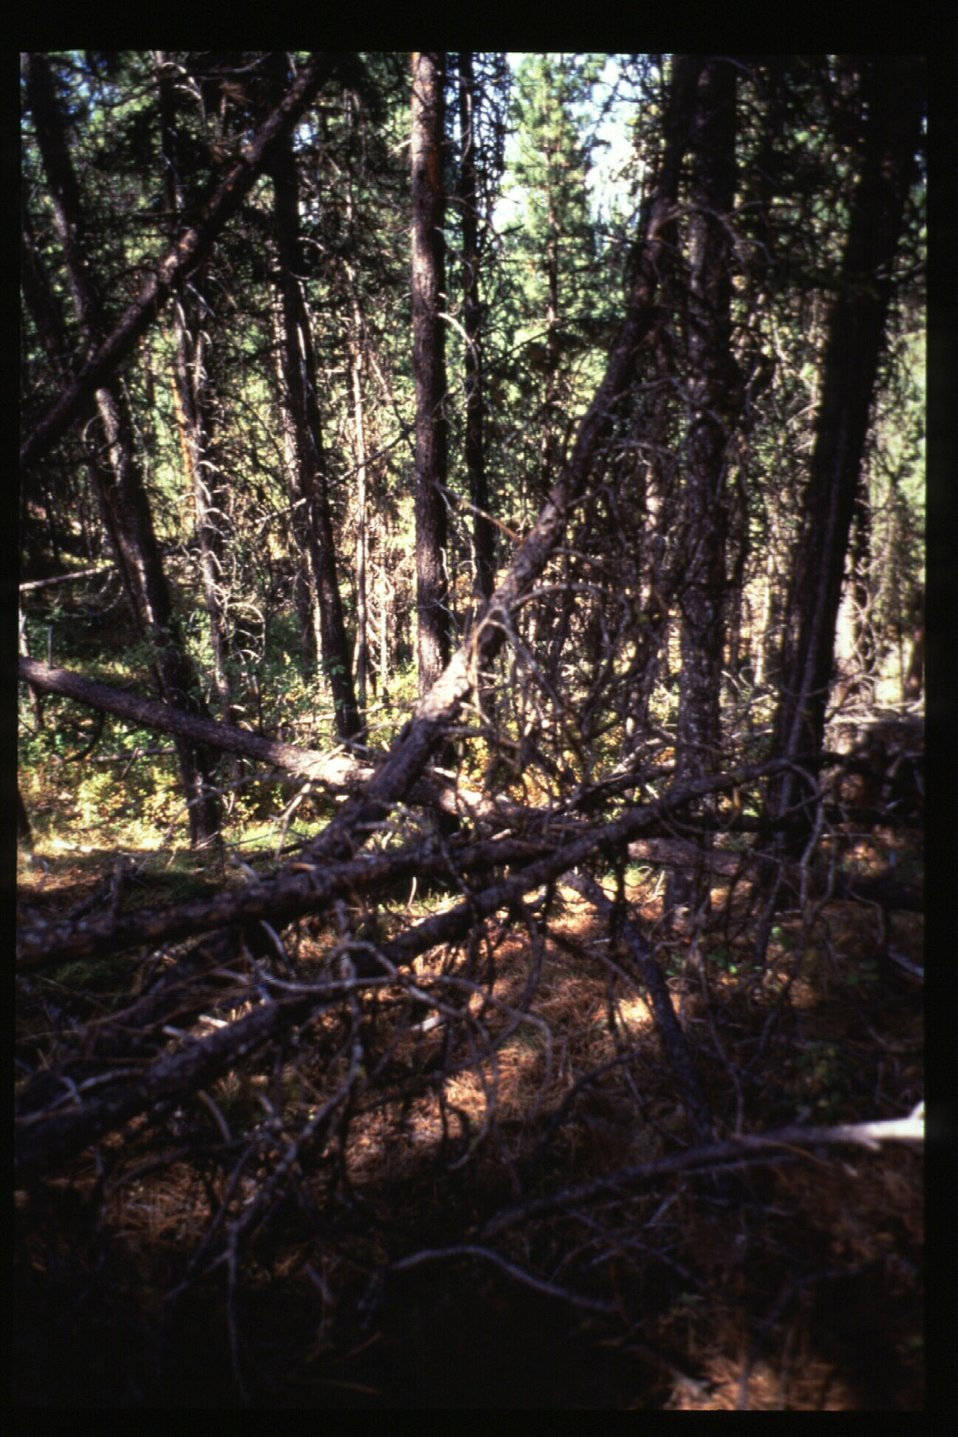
8th Street Fire Four Rivers Field Office LSRD Lower Snake River District